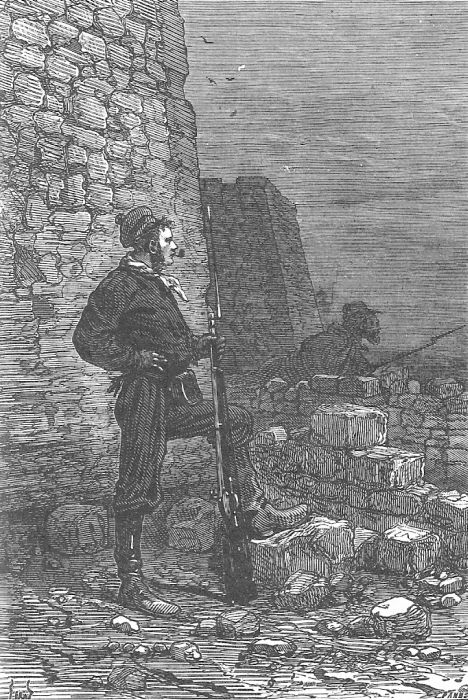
An illustration from Jules Verne's novel 'The Adventures of Three Englishmen and Three Russians in South Africa' (1870) drawn by Jules Férat. Polski: Ilustracja powieści Juliusza Verne'a 'Przygody trzech Rosjan i trzech Anglików w południowej Afryce' (1870) autorstwa Julesa Férata. Français : Jules Verne: 'Aventures de trois russes et de trois anglais dans l’Afrique australe' (1870), dessins par Jules Férat.